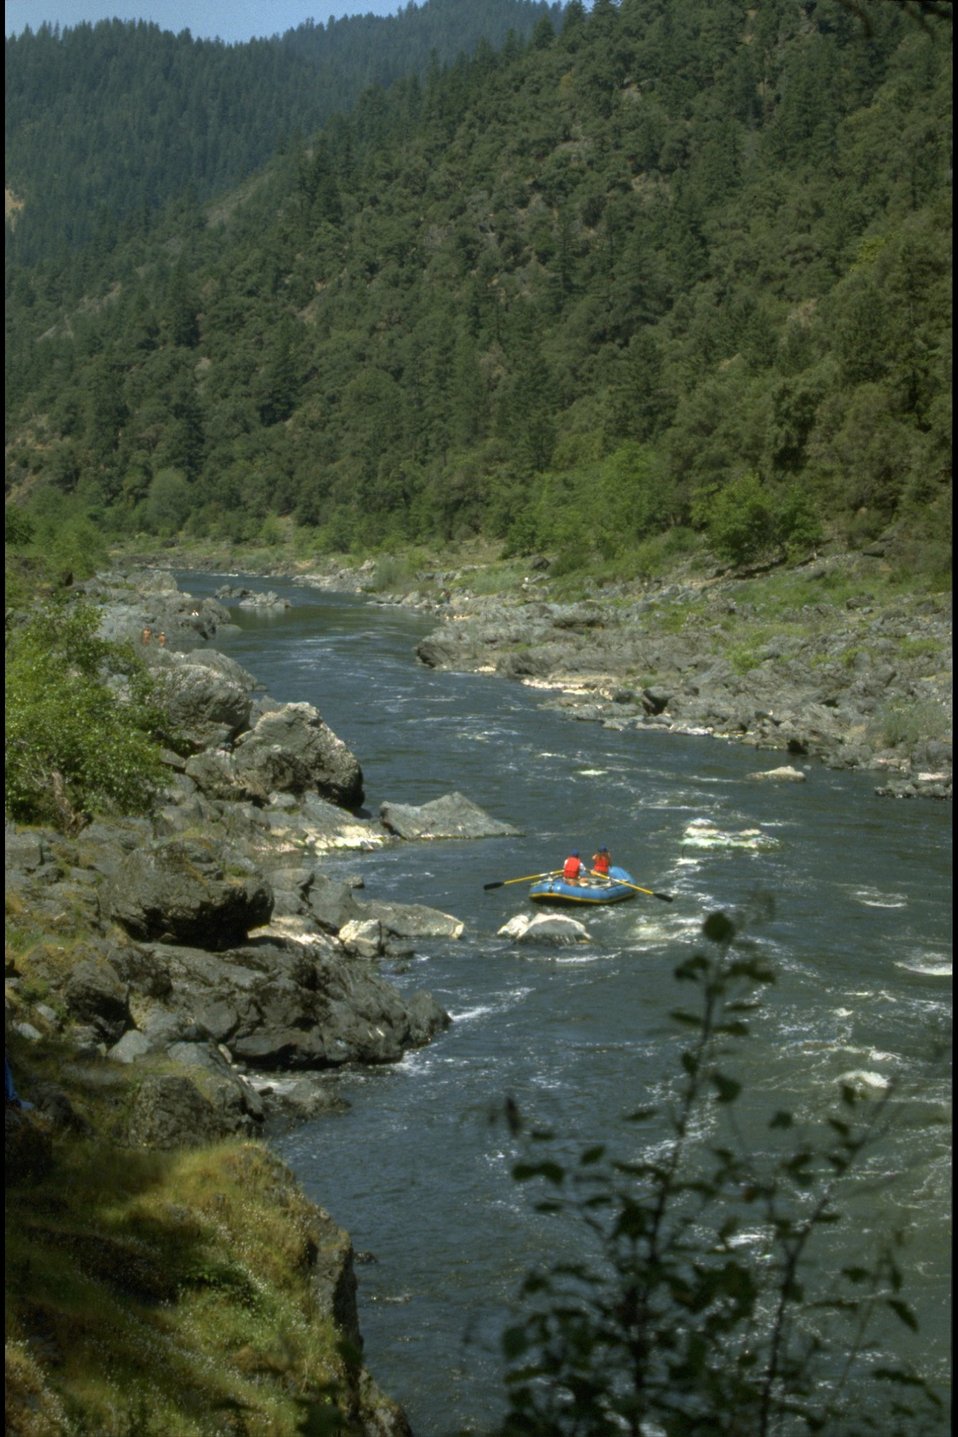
Rogue River - Wild section, just below Rainie Falls.